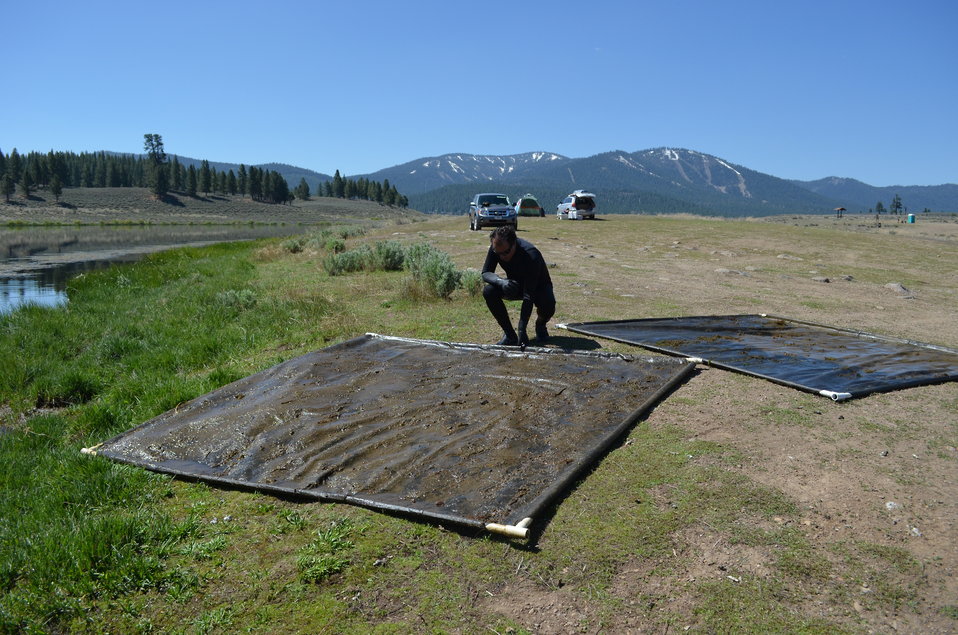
Corps fights invasive weeds at Martis Creek Lake

Tahoe Divers Conservancy director, Phil Caterino, inspects weed barriers at Martis Creek Lake in Truckee, Calif., during a removal, cleaning and replacement project May 19, 2012. The gas-permeable barriers kill invasive plants by blocking sunlight, but don't disturb other plant and animal species. The U.S. Army Corps of Engineers and Tahoe Divers Conservancy have teamed up to sustainably eradicate invasive milfoil at the lake, managed by the Corps’ Sacramento District.